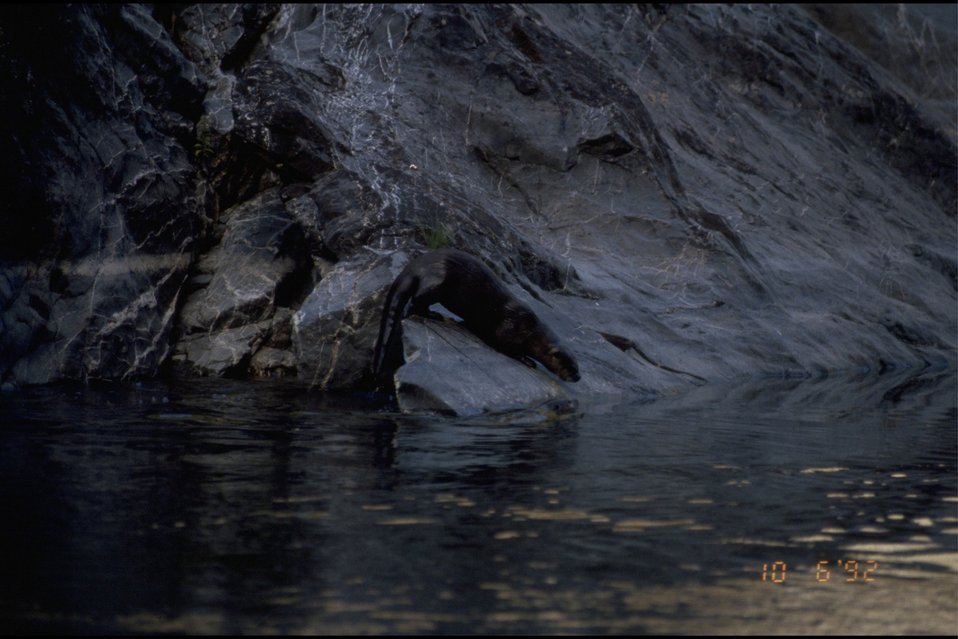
Rogue River, wild section - River Otter.